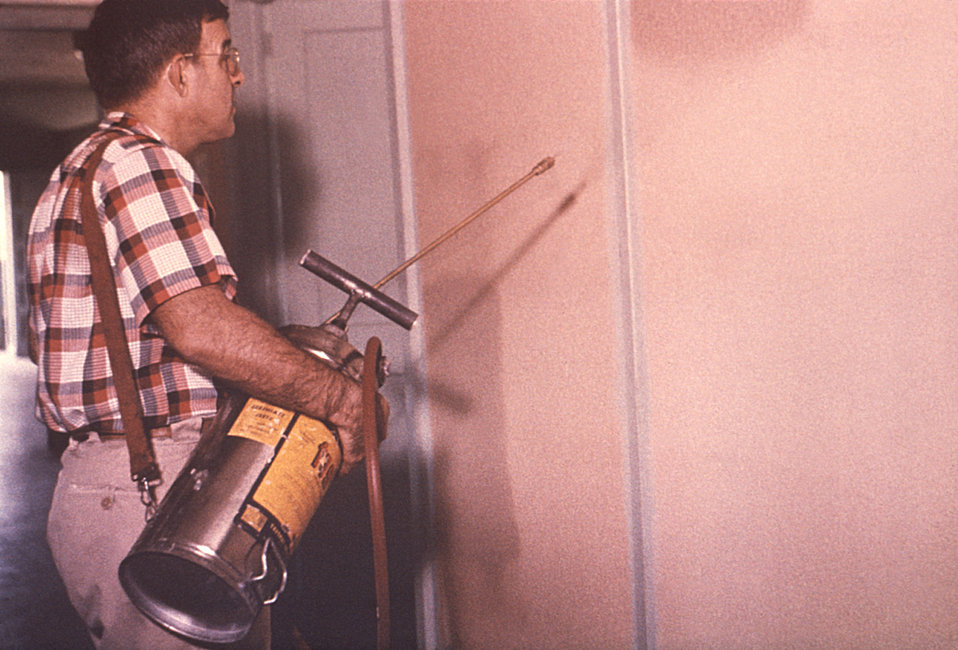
This 1981 photograph depicts a vector-control field technician applying insecticide by using hand-held equipment so as to control mosquito populations in a mosquito-ridden environment.